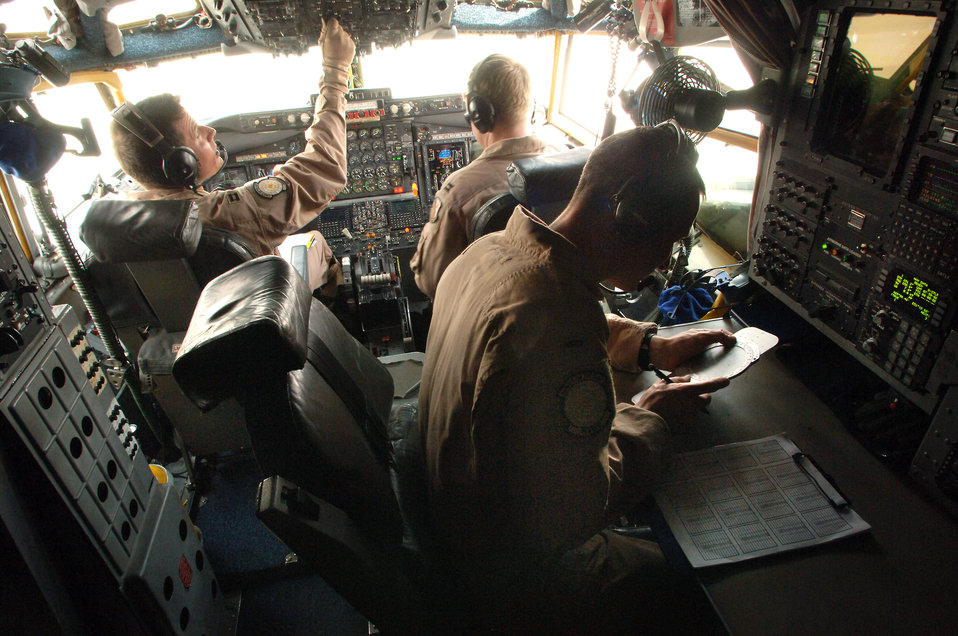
Jan. 11 marks 6,000 consecutive days in Southwest Asia

Captains Guy Perrow and Erik Dunkley and 1st Lt. Michael Morrison prep a RC-135 Rivet Joint for a flight. RC-135's have been deployed from the 55th Wing at Offutt Air Force Base, Neb., and maintained a constant presence in Southwest Asia for 6,000 days since Aug. 9, 1990, just prior to Operation Desert Shield. Captain Perrow is the aircraft commander, Captain Dunkley is the co-pilot, and Lieutenant Morrison is the navigator.